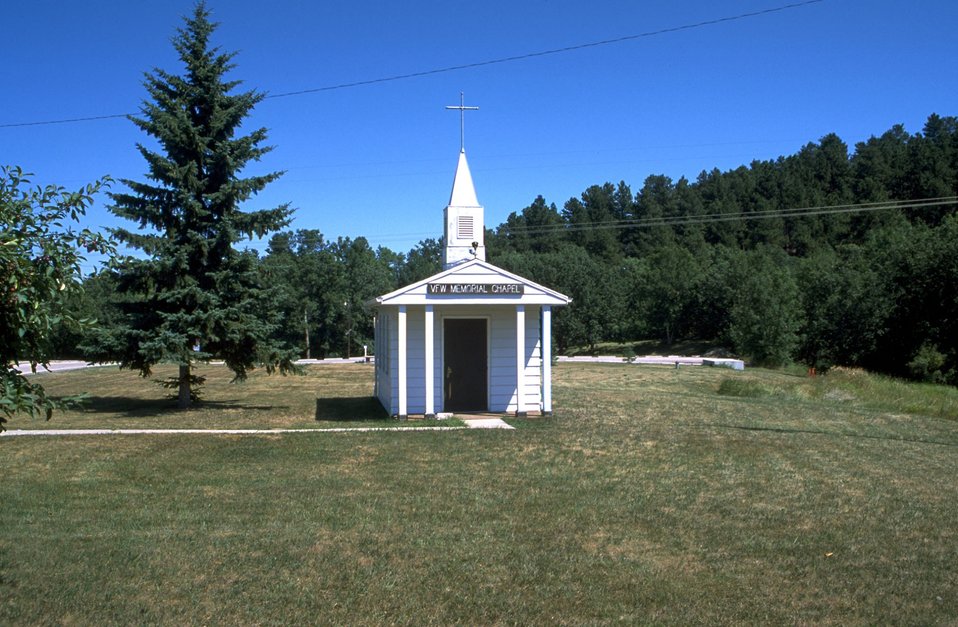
Veterans of Foreign Wars Chapel at Fort Meade South Dakota